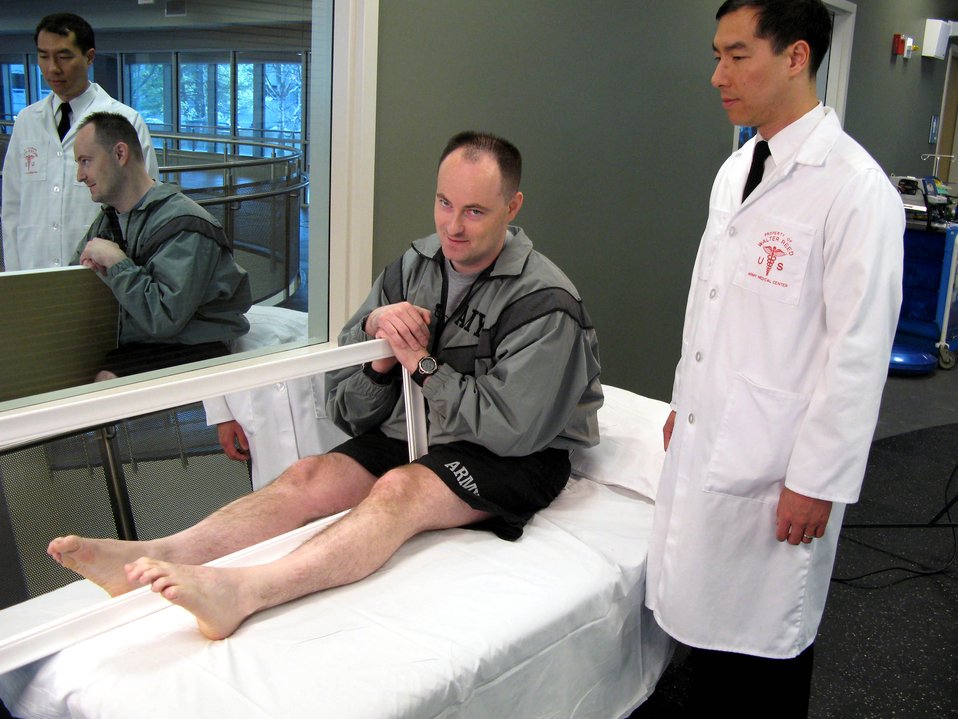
Mirror therapy shows promise in amputee treatment

Navy Cmdr. (Dr.) Jack Tsao shows Army Sgt. Nicholas Paupore how to perform mirror therapy to treat phantom pain in his amputated right leg Jan. 15 at Walter Reed Army Medical Center in Washington, D.C. Commander Tsao conducted the first clinical trials in mirror therapy and said he hopes to advance the study to bring relief to amputees from Iraq and Afghanistan. Commander Tsao is the associate professor of neurology at the Uniformed Services University of the Health Sciences at Bethesda, Md.